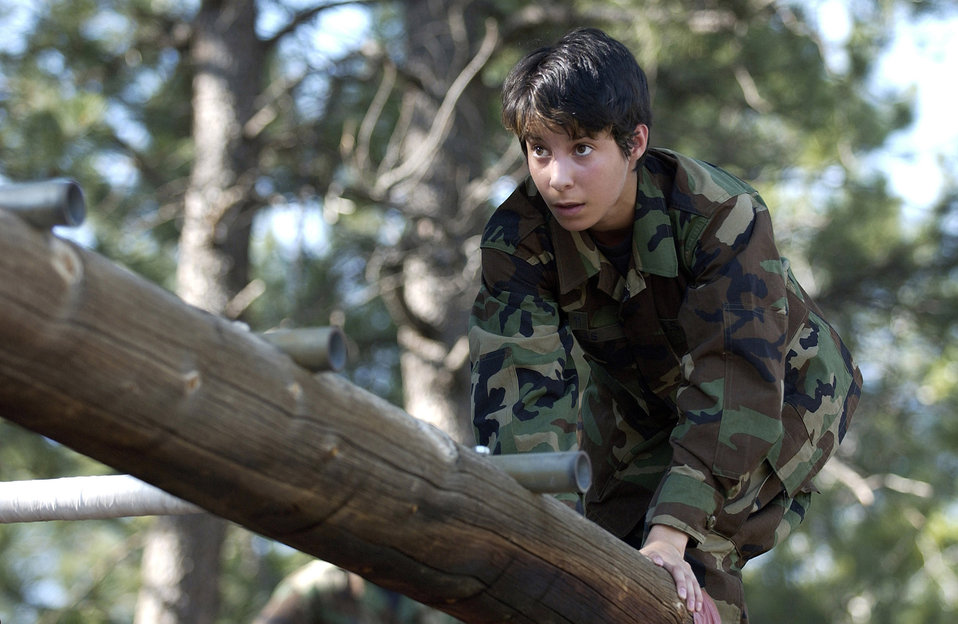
Staying balanced

Academy cadet trainee Ariana Salas successfully crosses a balance beam station of the Jacks Valley obstacle course during the second day of a two-week field training exercise.